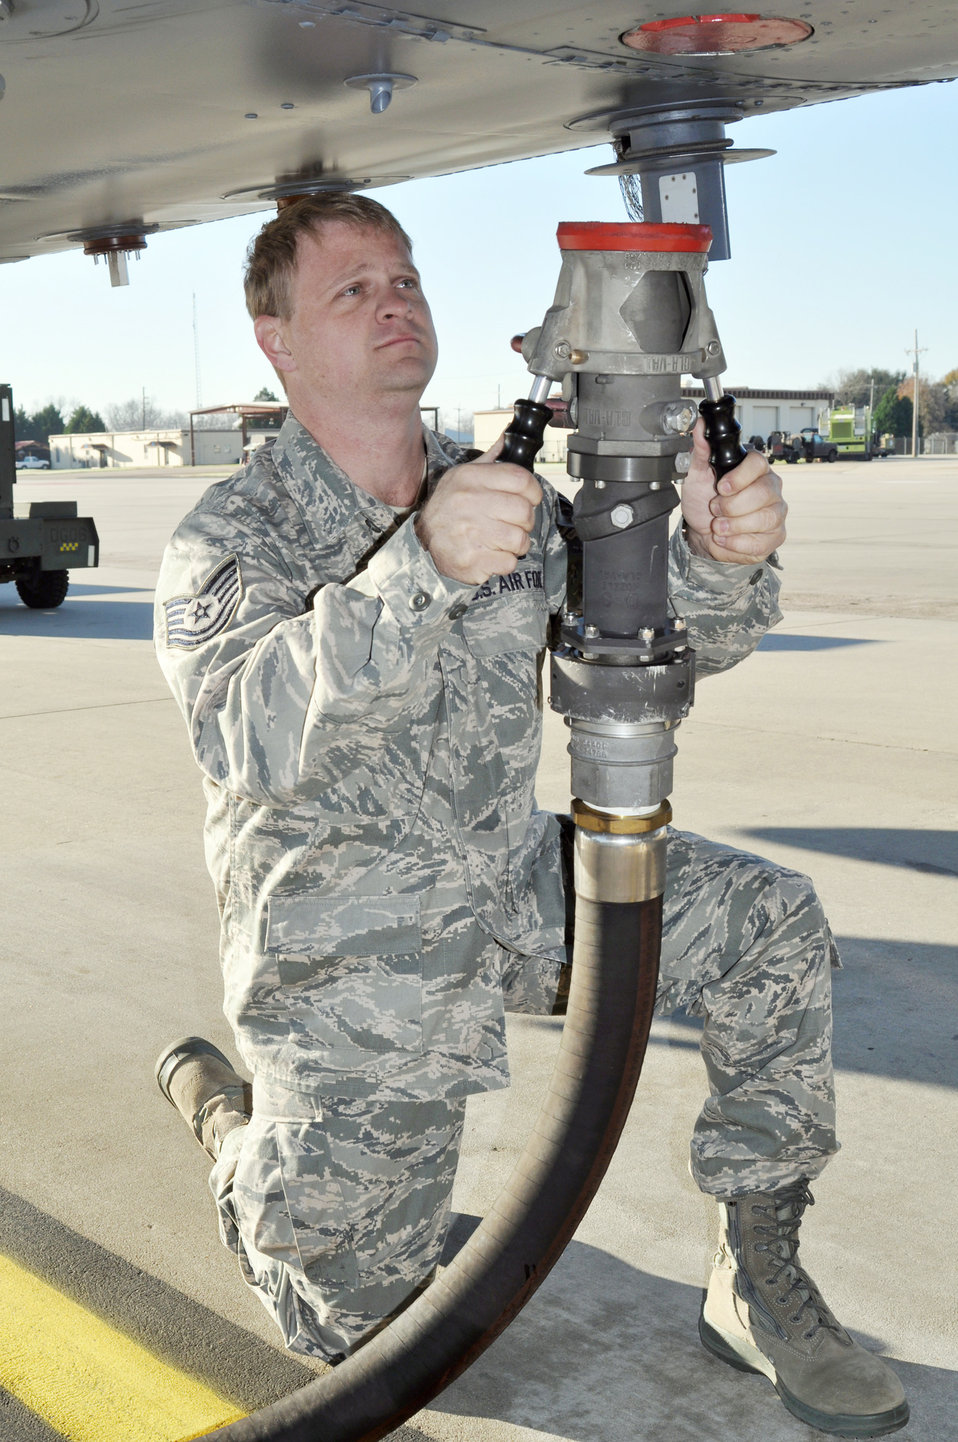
Ready for the hook-up...

Tech. Sgt. Jayson Kennedy, a fuels technician, prepares to attach the single point line to the B-52 Stratofortress at Barksdale Air Force Base, La., flightline Dec. 4, 2009. Sergeant Kennedy is assigned to the 917th Wing at Barksdale.